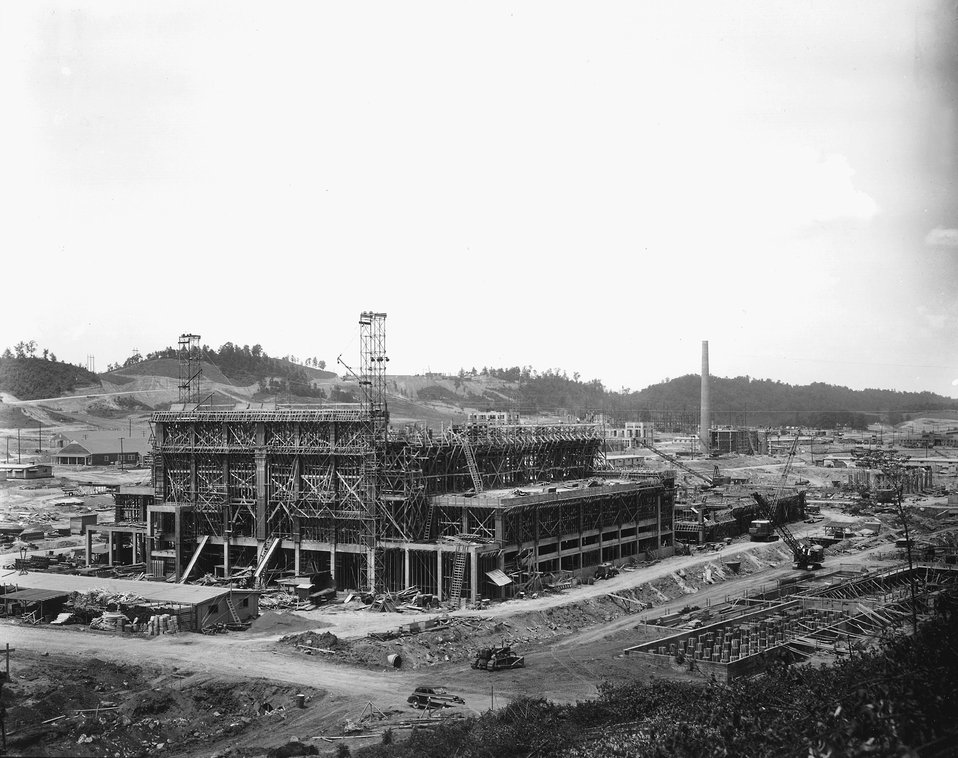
View of Alpha Building under construction. c. 1945